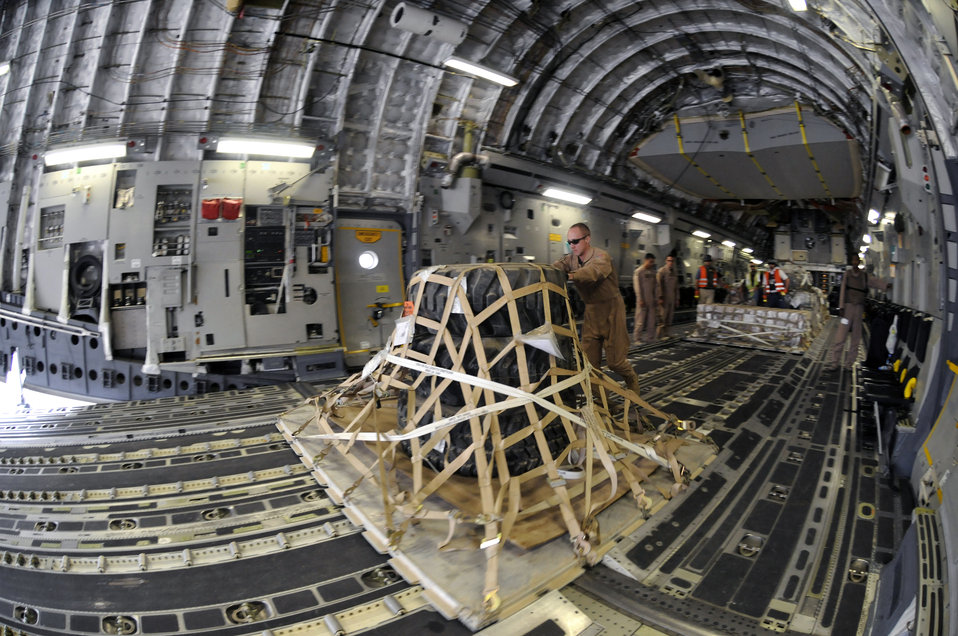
Airlift delivers for warfighters

Airmen unload cargo from the back of a C-17 Globemaster III Nov. 19 at Mosul Air Base, Iraq. The C-17 has been delivering cargo to and from different bases in the area of responsibility in support of Operation Iraqi Freedom.